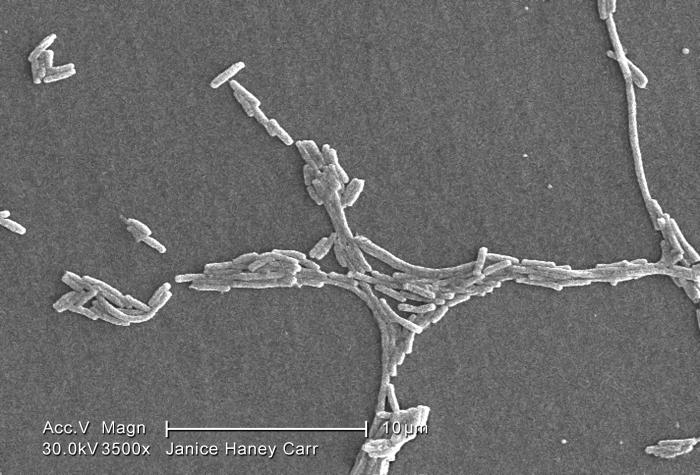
Under a moderate magnification of 3500X, this scanning electron micrograph (SEM) depicted a number of Gram-negative Legionella pneumophila bacteria. Please see PHIL 11092 through 11152 for additional SEMs of these organisms, specifically PHIL 11134 for a black and white version of this image. Of particular importance, is the presence of polar flagella, and pili, or long streamers, which due to their fragile nature, in some of these views seem to be dissociated from any of the bacteria. Both the flagella and the pili are seen in a somewhat better mode in the colorized version of this image.